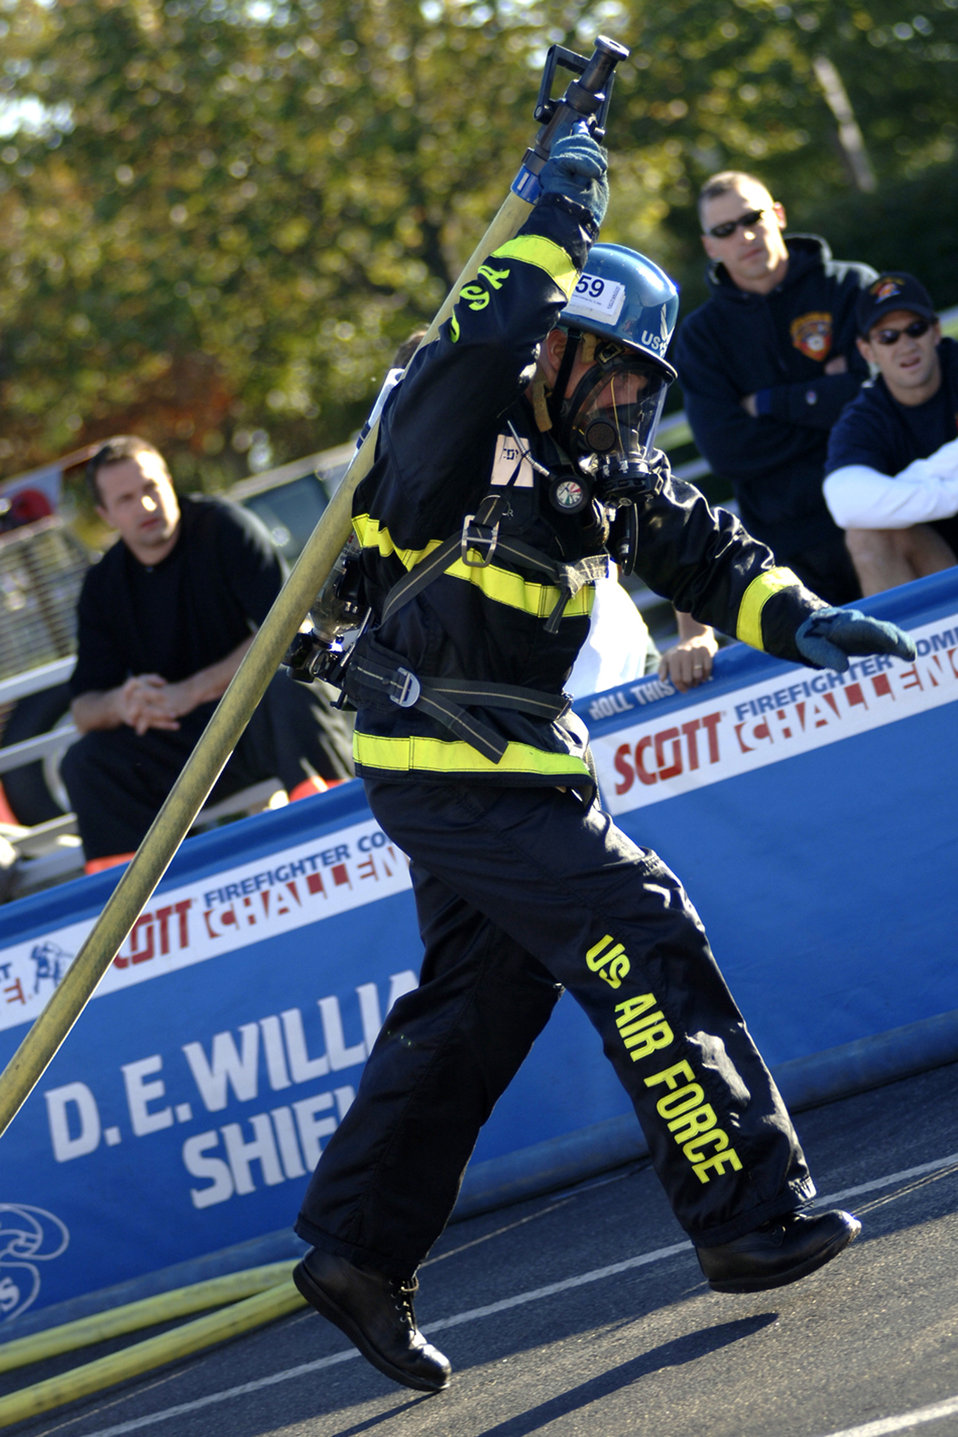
What a Drag

Tech. Sgt. Mike Melton, Team Travis, grabs the fire hose and runs 20 feet through some make shift doors to spray a target during the Firefighter Combat Competition at Morrow, Ga., Oct. 13, 2006.